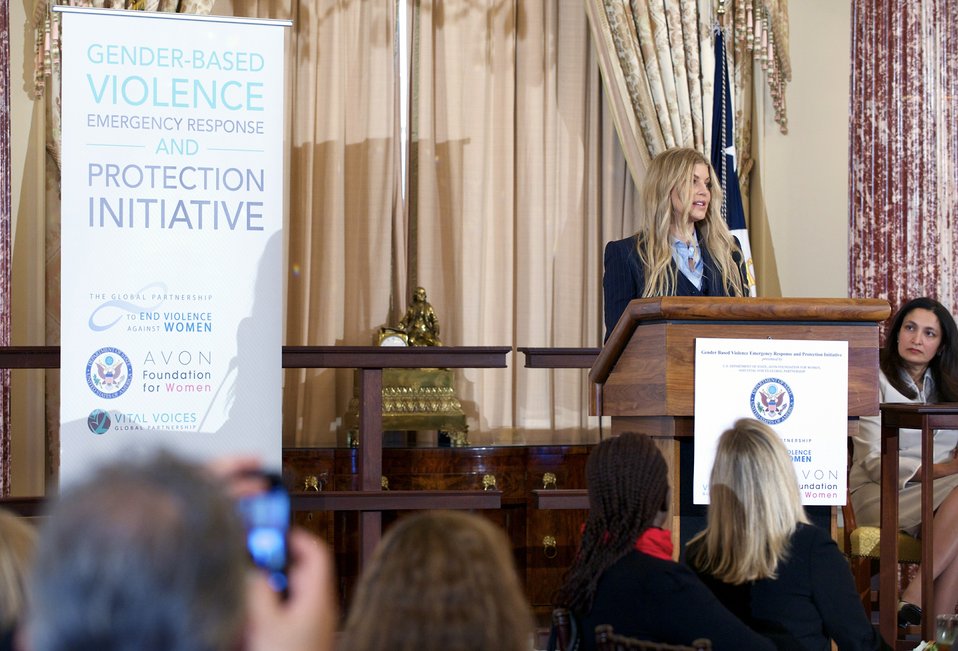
Avon Global Ambassador Fergie Delivers Remarks at the Launch of the Gender-Based Violence Emergency Response and Protection Initiative

With Acting Assistant Secretary for Democracy, Human Rights and Labor Uzra Zeya looking on, Avon Global Ambassador Fergie delivers remarks at the launch of the Gender-Based Violence Emergency Response and Protection Initiative at the U.S. Department of State in Washington, D.C., on March 20, 2014.